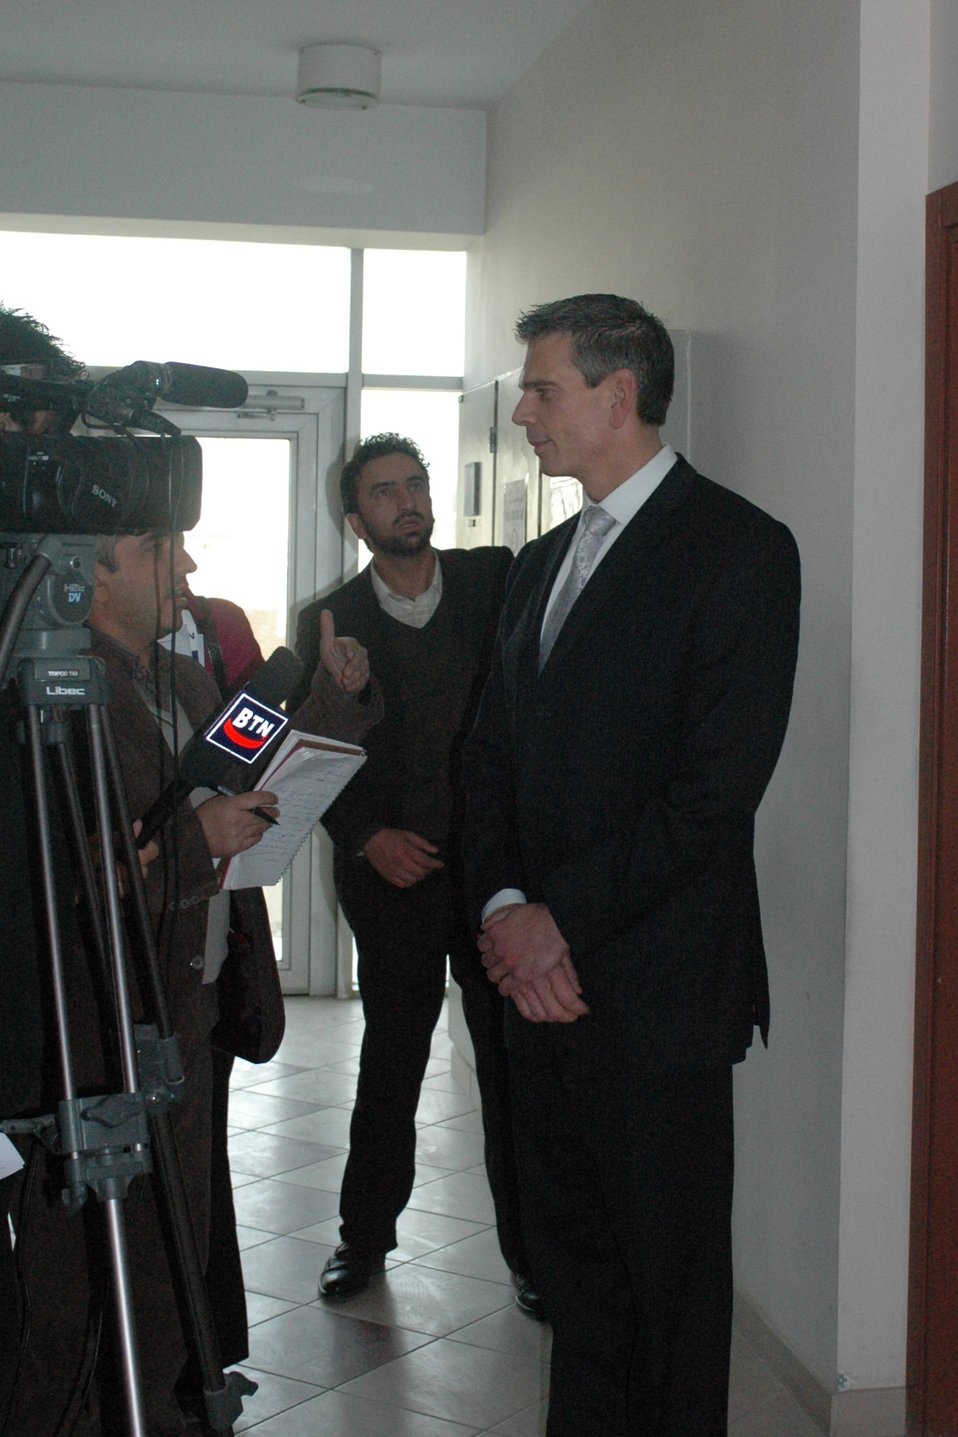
Community Based Stabilization Grants Ceremony, December 7, 2010